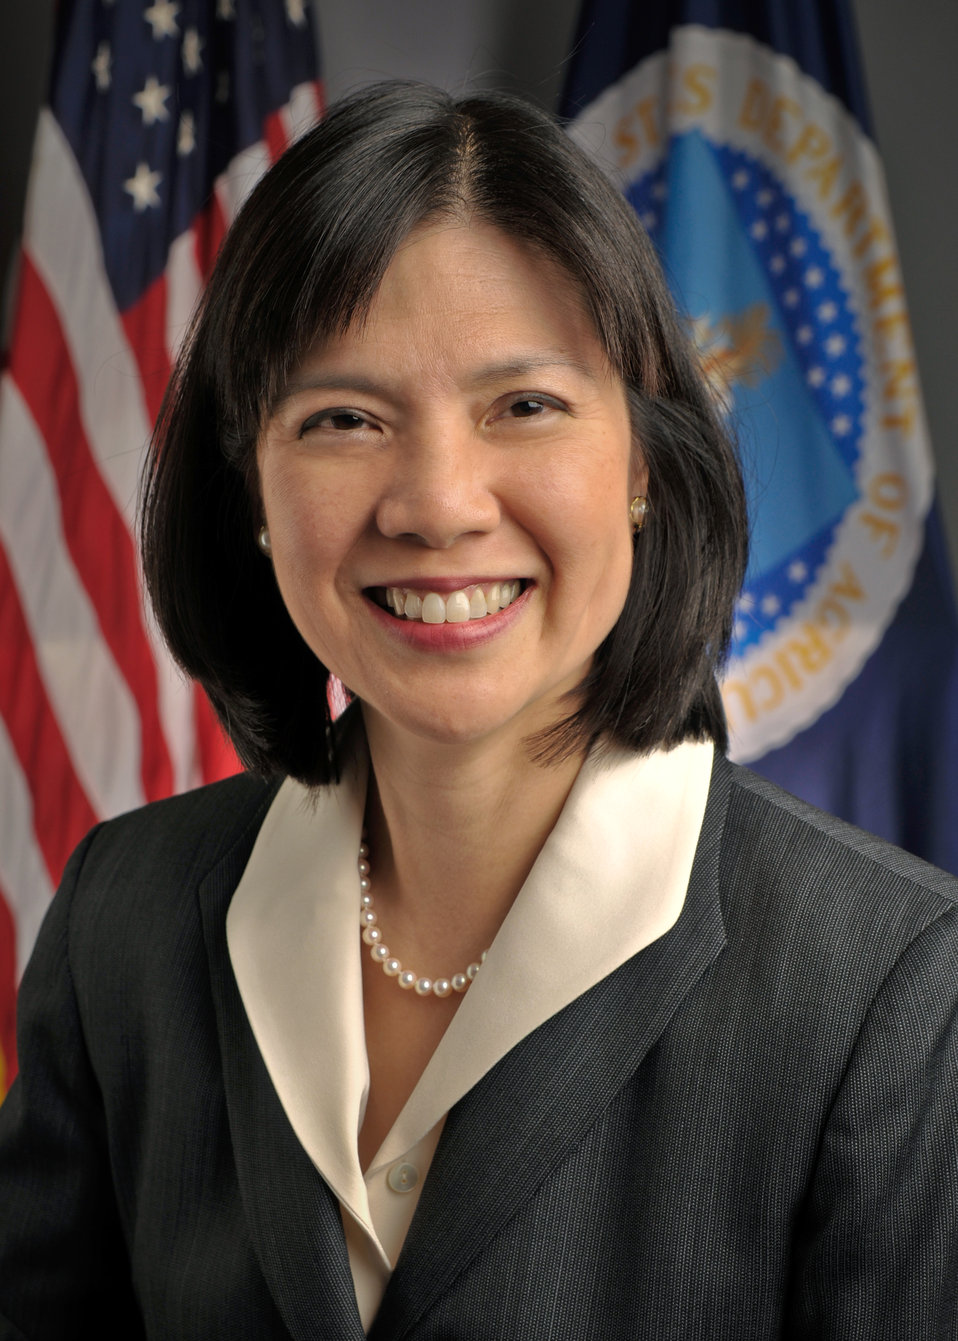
09di1166 Inspector General Phyllis K. Fong

USDA Inspector General Phyllis K. Fong.